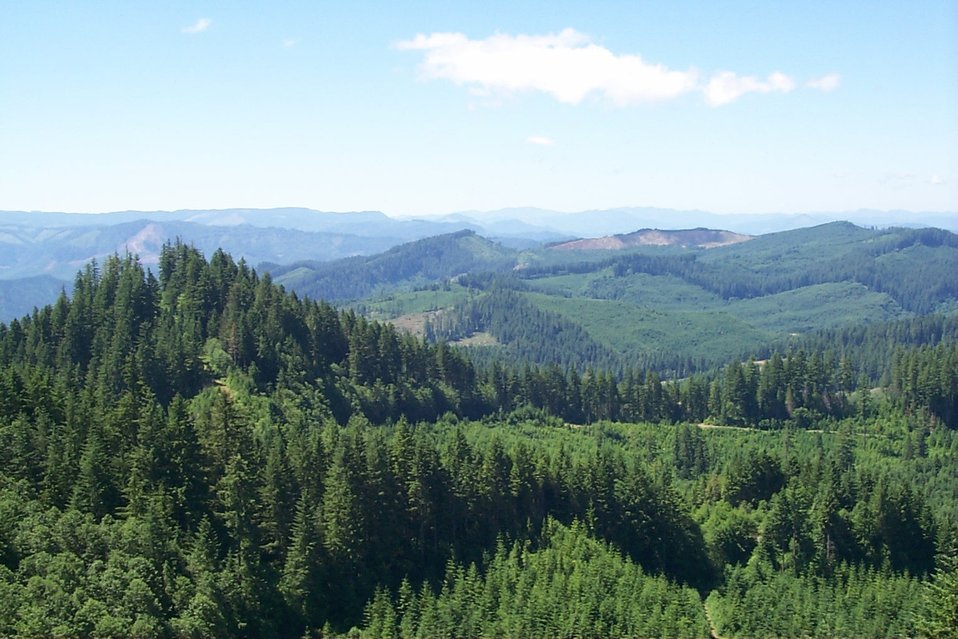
Camas East Timber Sale in Late Successional Reserve.